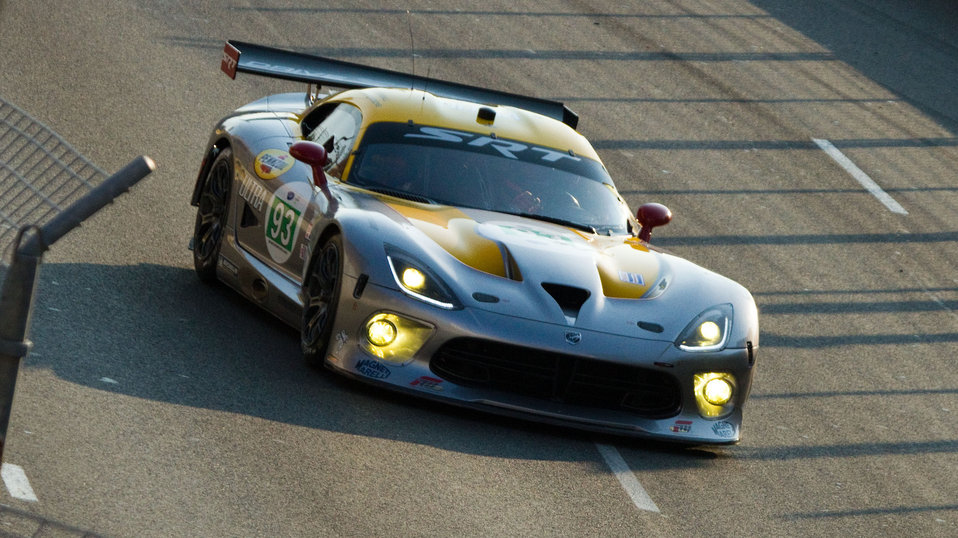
The Number 93, SRT Viper GTS-R of the SRT Motorsport Team uses E85 fuel for the American Le Mans Series (ALMS) motorsport series at the Baltimore Grand Prix, on the streets of downtown Baltimore, MD, on Friday, August 31, 2012, Labor Day Weekend. ALMS says they are “the Global Leader in Green Racing by being the only racing series recognized to comply with the Green Racing protocols developed by the U.S. Department of Energy (DOE), the U.S. Environmental Protection Agency (EPA) and Society of American Engineers International (SAE).” Instead of high-octane gasoline all the cars in the series use one of 5 different forms of energy (system). Clean diesel, E85, E10, isobutanol or hybrid energy technology. The specific hybrid system, used by the Porsche GT3 cars, are a (battery-less) flywheel-based Kinetic Energy Recovery Systems. These organizations are accelerating technology development at speeds up to 200 mph, in 650-700 horsepower race cars that are based on two groups of cars; the purpose built prototype race cars and the GT
(Grand Touring) cars based on production sports cars that you can see in showrooms. From these groups, there are five classes of cars, all of which race at the same time during the race events.
The U.S. Department of Agriculture (USDA) focuses on renewable fuel sources that are profitable and sustainable. 2011 accomplishments include research and planning for renewable energy and investments in renewable energy production.
- Completed a Biofuels Roadmap proposing a plan of action to meet congressionally mandated RFS2 goals for national biofuels production.
-Coordinated five regional research centers to work on the science necessary to ensure profitable biofuels can be produced from a diverse range of feed stocks across the nation, not just in the Midwest where the industry is already thriving.
-Over three years, USDA invested about $320 million to accelerate research on renewable energy ranging from genomic research on bioenergy feedstock crops, to development of biofuel conversion processes and costs/benefit estimates of renewable energy production.
- More than 130 biodiesel and ethanol projects funded by USDA are currently producing almost 3.7 billion gallons of biodiesel and ethanol annually, enough fuel – in equivalence to gasoline – to keep five million vehicles on the road every year.
-We are supporting efforts to build five biorefineries to produce advanced biofuels in states from Florida and Michigan to New Mexico, with investments worth about $310 million. We are supporting facility upgrades and feasibility studies for advanced biofuels projects in every region of the country.